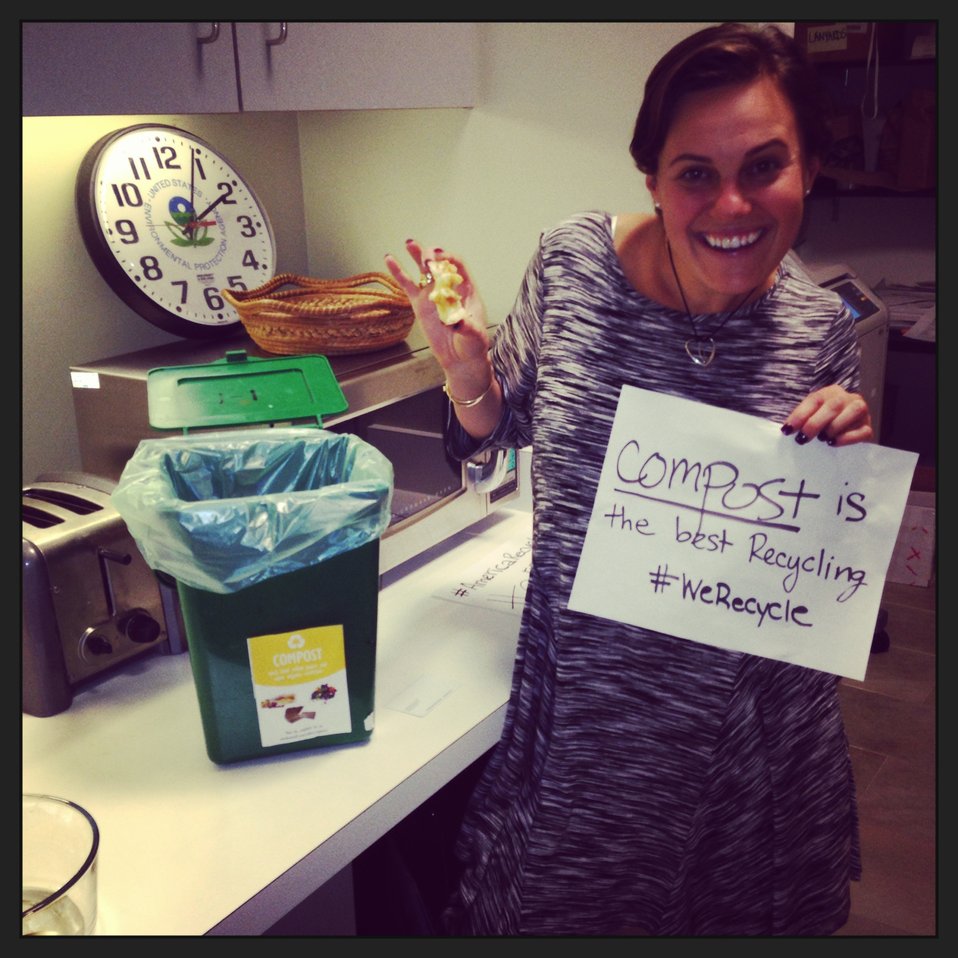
EPA Employee Shira Recycles

At EPA, #WeRecycle. Learn how you can too: www2.epa.gov/recycle